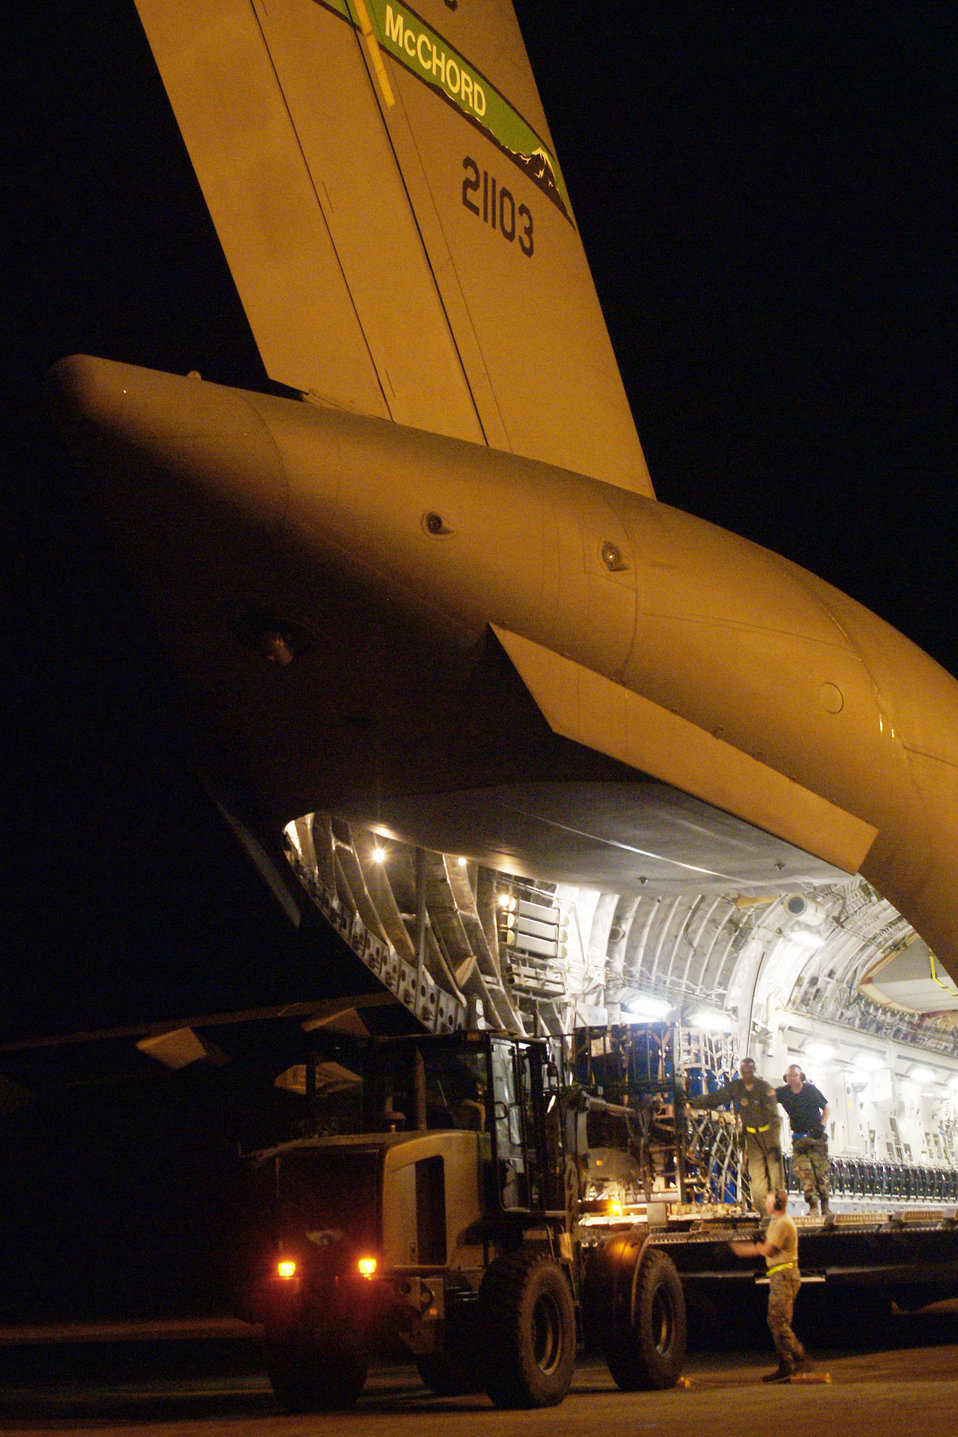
McChord Airmen provide humanitarian airlift to Indonesia

7th Airlift Squadron Airmen from McChord Air Force Base, Wash., and members of the 36th Mobility Response Squadron from Andersen AFB, Guam, off-load cargo from a C-17 Globemaster III on a humanitarian mission Oct. 9, 2009, at Minangkabau International Airport in Padang, Indonesia.